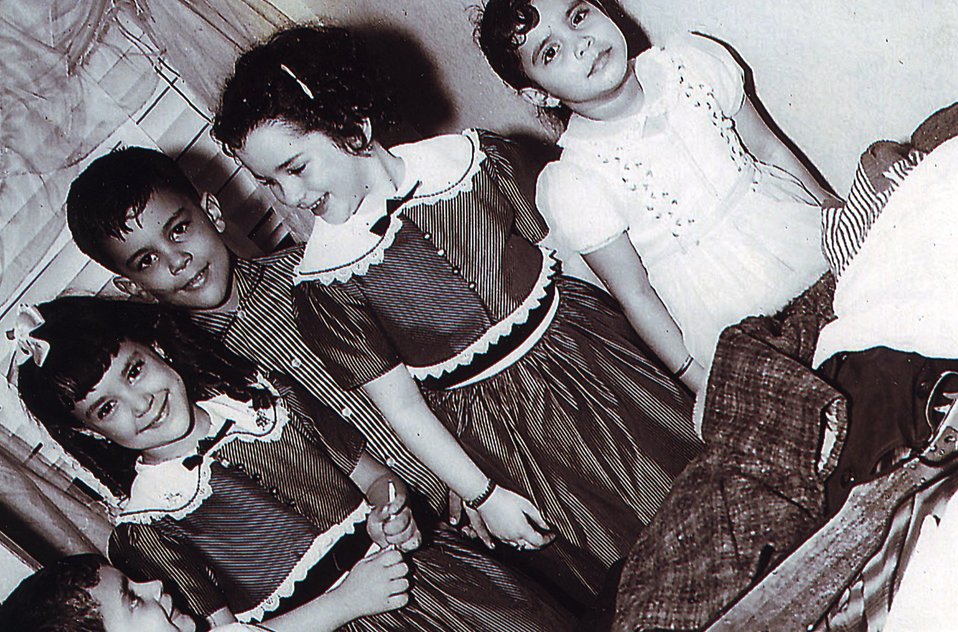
Youth 2

A young Judge Sonia Sotomayor with her sister Miriam and cousins.